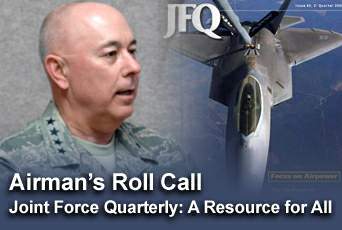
Airman's Roll Call highlights a resource for all

This week's Airman's Roll Call focuses on the Joint Force Quarterly magazine. The publication is the chairman of the Joint Chiefs of Staff flagship joint military and security studies journal.